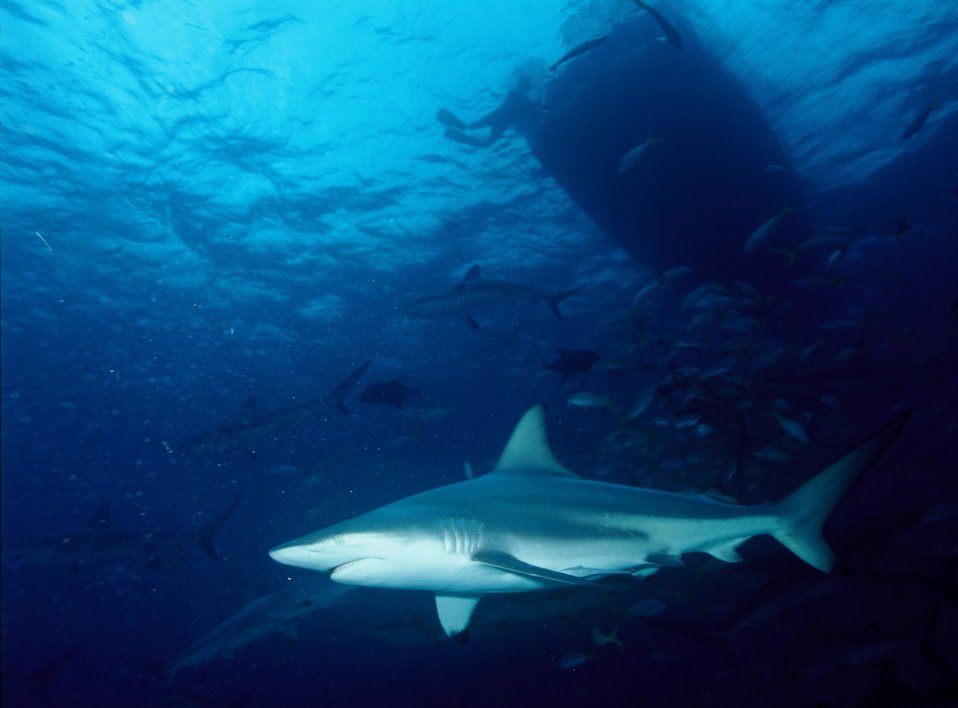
C.limbatus2